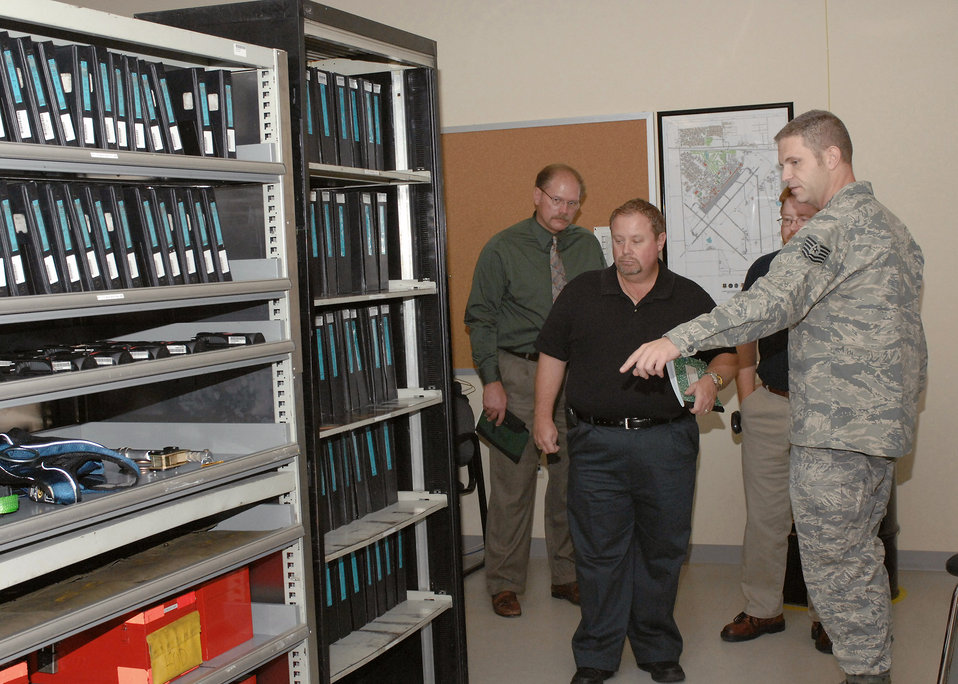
Volunteer Protection Program members discuss current policies with Airmen from the 27th Special Operations Aerospace Medicine Squadron at Cannon Air Force Base, N.M. One of the team's primary goals was to get squadrons to work together on strengthening their safety programs.